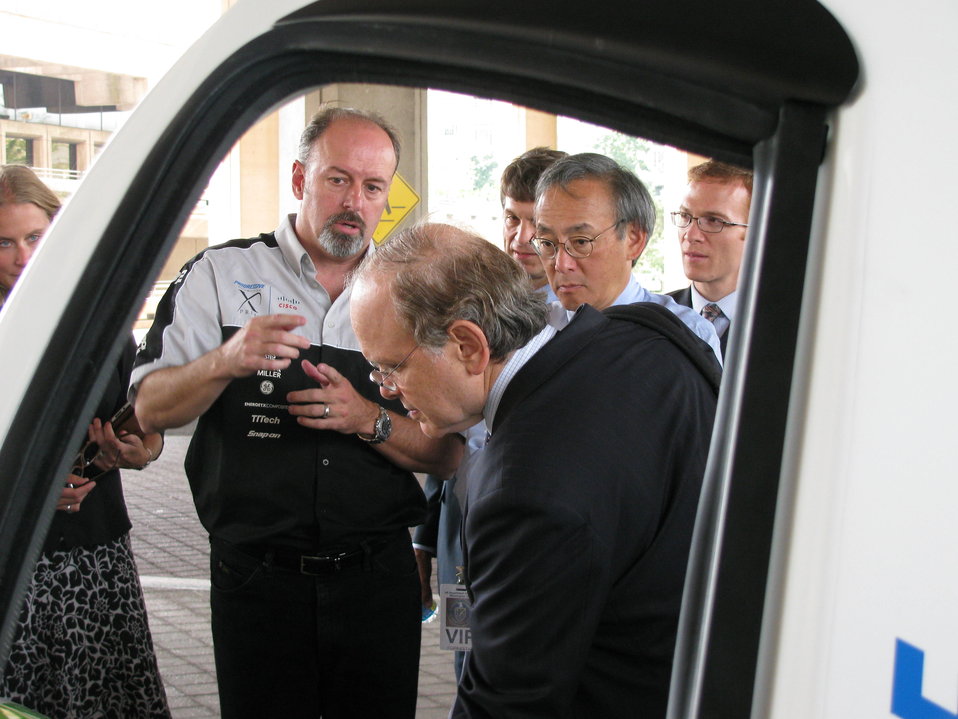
X Prize 026